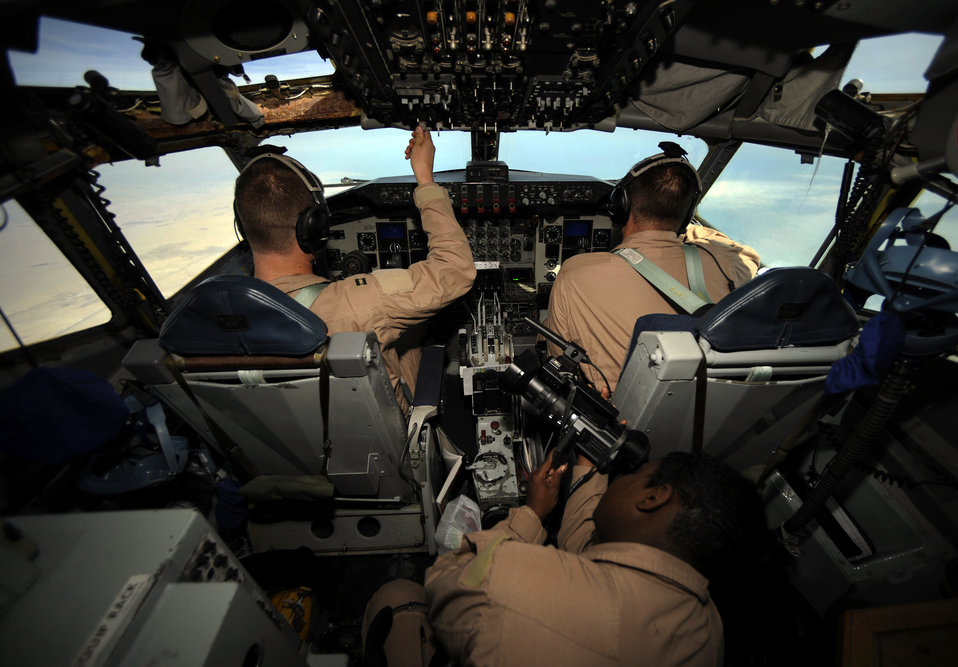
Refuelers keep mission soaring

Capt. Micah Vander Veen (left) and 1st Lt. Jake Houston, assigned to the 340th Expeditionary Air Refueling Squadron at an air base in Southwest Asia, fly a KC-135 Stratotanker on an air refueling mission in support of Operation Iraqi Freedom. They are being filmed by Staff Sgt. Chalanda Roberts from the 1st Combat Camera Squadron.